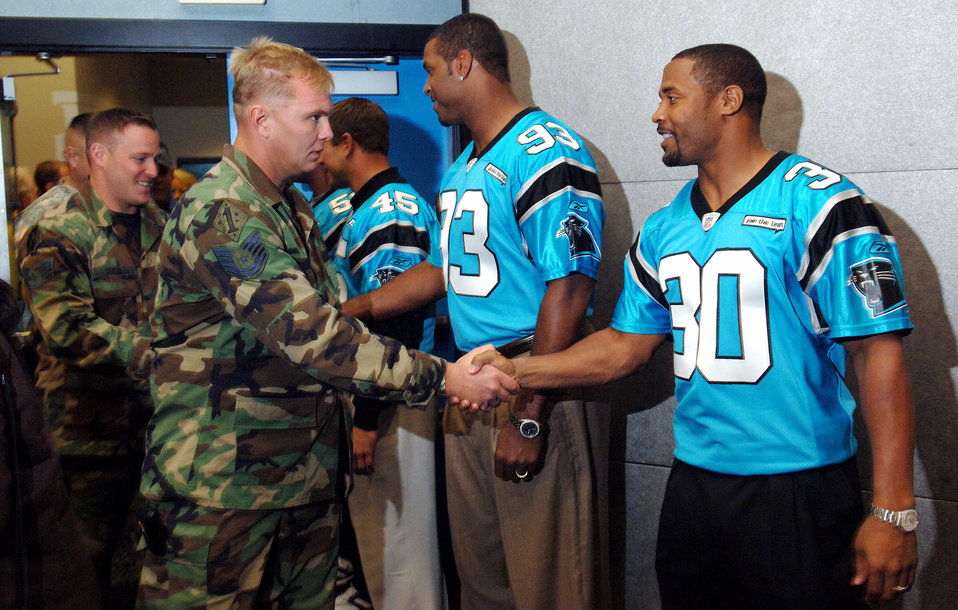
Operation Welcome Home

Tech. Sgt. Greg Overbay meets Carolina Panthers safety Mike Minter as part of Operation Welcome Home, inside the Bank of America Stadium, Charlotte N.C., on Oct. 24. OWH allowed military members from the Air Force, Army, Navy and Marines to tour the stadium and meet several players from the Carolina Panthers as a thank you after deploying in support of Operations Iraqi Freedom and Enduring Freedom. Sergeant Overbay is in the Air National Guard and is a tactical air controller with the 118th Air Support Operations Squadron, New London, N.C.